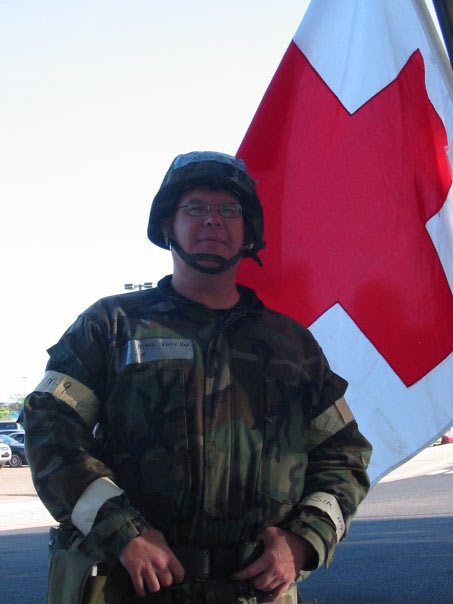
Mark Vaughn-Mountain-Prairie Region

Mark R. Vaughn is now a HR/Payroll Liaison at Bear River Migratory Bird Refuge in Utah.